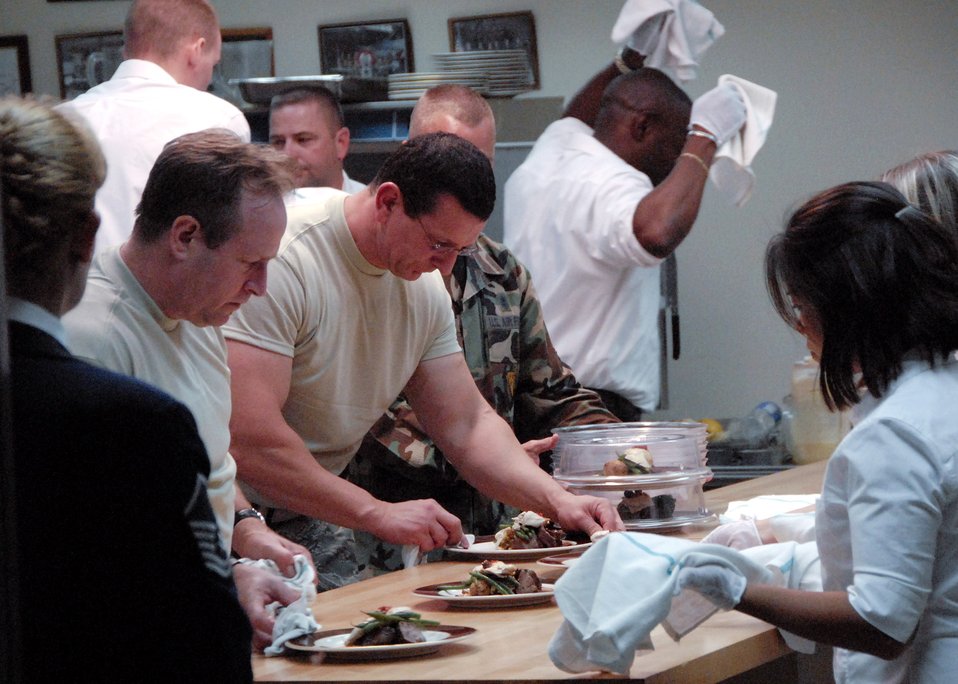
Airmen featured on Food Network

Chef Robert Irvine (center) of the Food Network's hit show